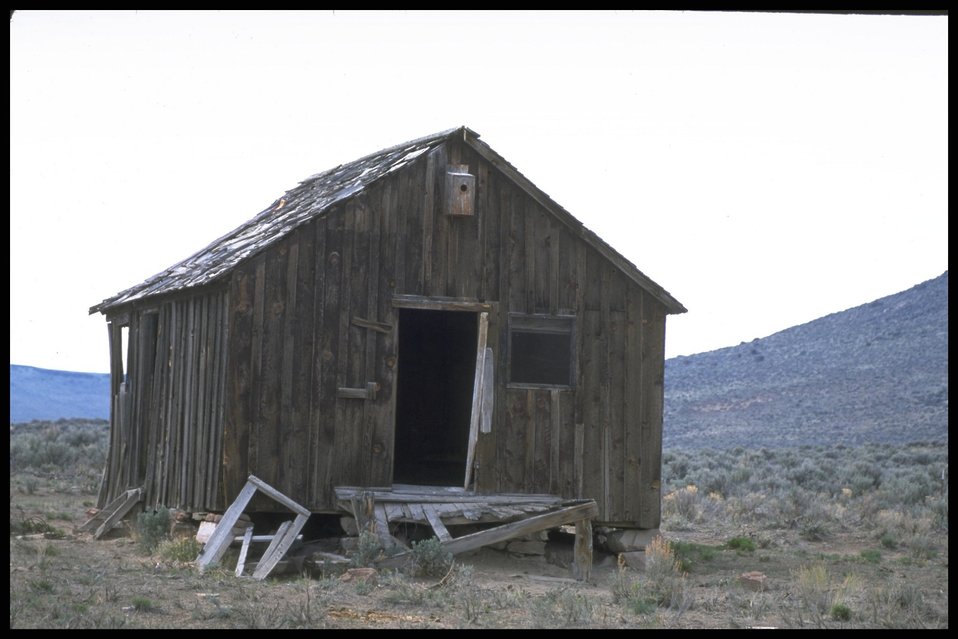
Old house (Joe's Place) at Shirk Ranch, Lakeview District.